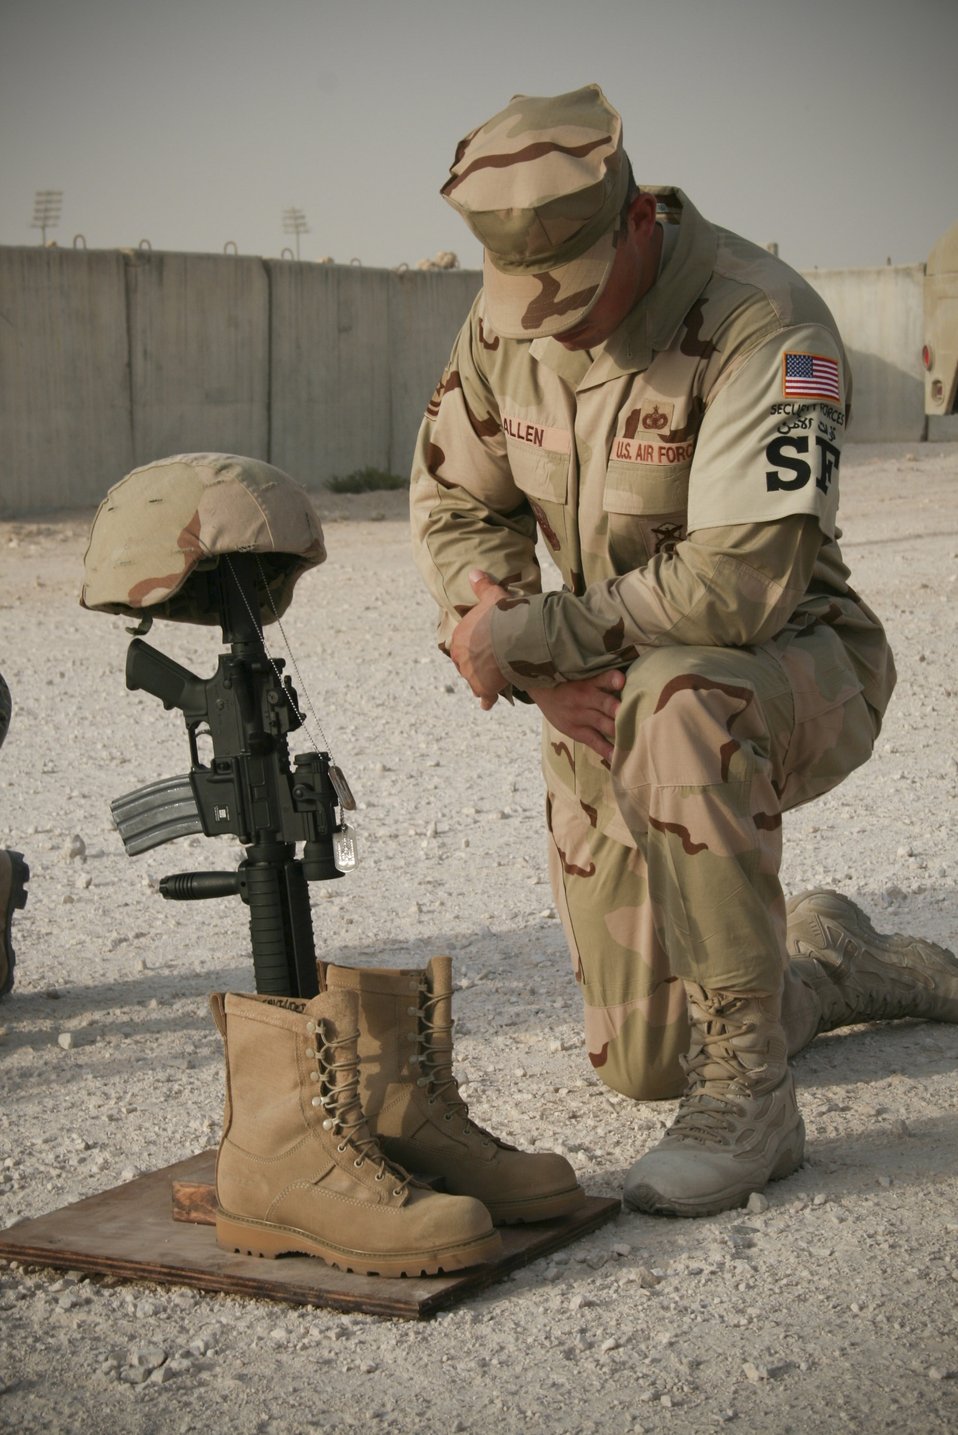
A final tribute

At a base in Southwest Asia, Tech. Sgt. William Allen pays his respect to those who have given the ultimate sacrifice.